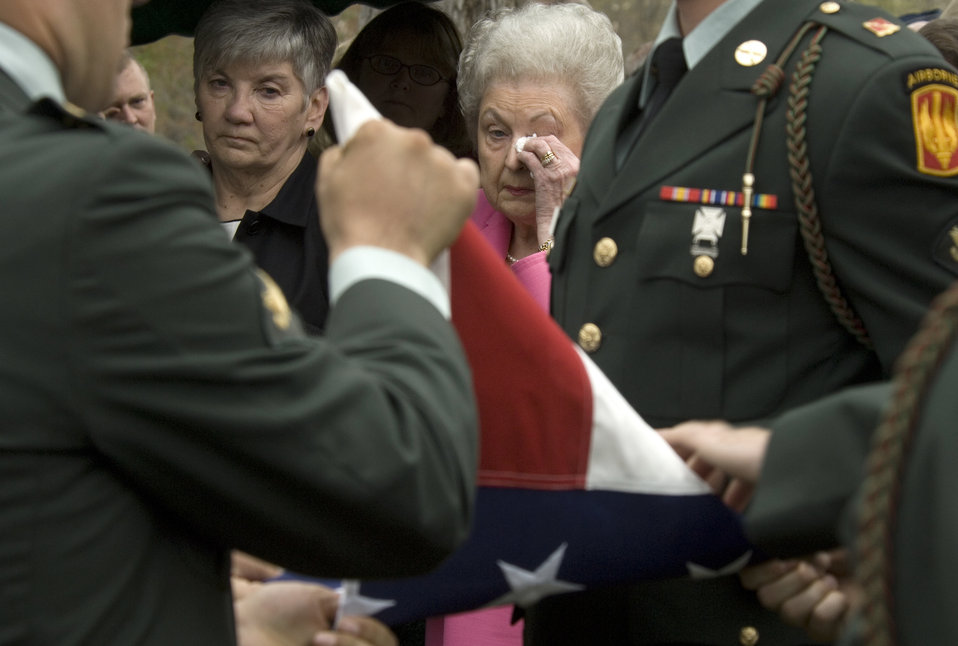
Pilot burial solves two mysteries

Joan Kitchen, niece, (left) and Lola Upchurch, sister-in-law, watch members of the 82nd Airborne at Fort Bragg, N.C., fold the flag Saturday, April 8, 2006, during a memorial service for 2nd Lt. Robert Hoyle Upchurch. The lieutenant was a member of the famed Flying Tigers during World War II and was listed as missing in action until his remains were identified last May by the Joint POW/MIA Accounting Command.